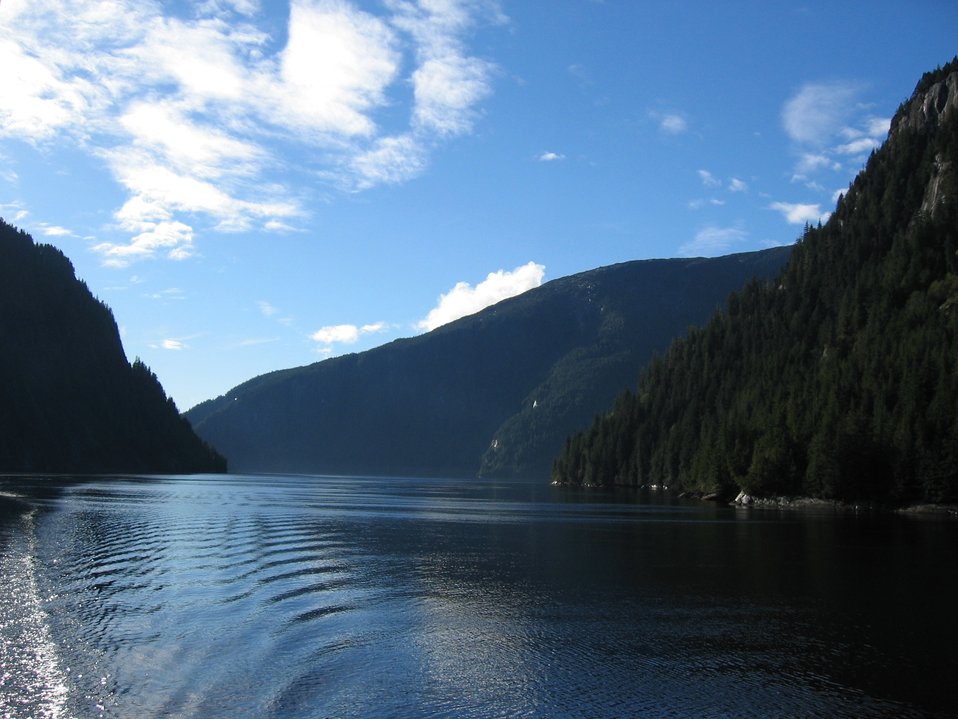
Labyrinthine waterways dissecting the mountains of SE Alaska.